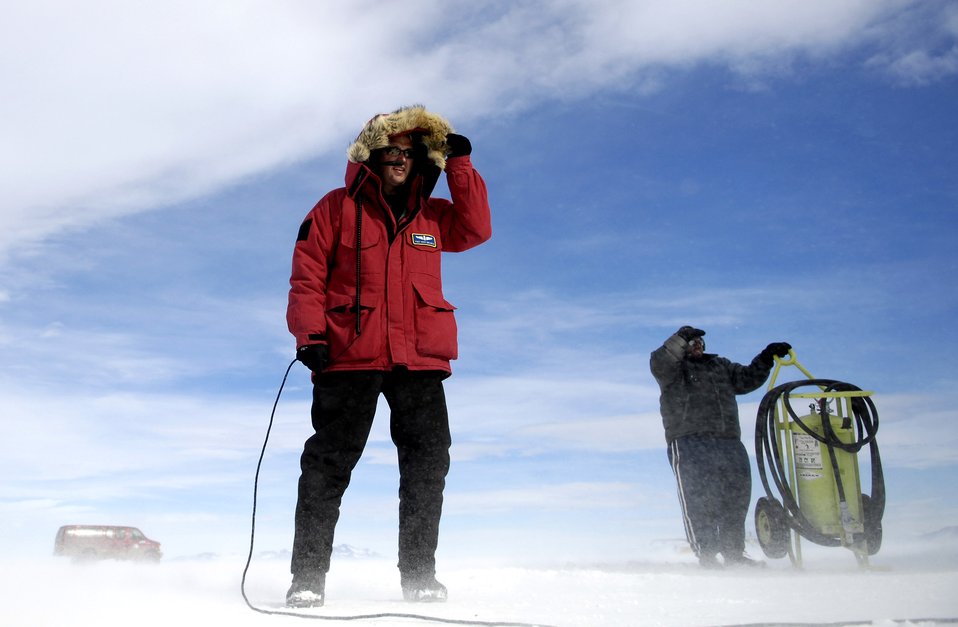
Operation Deep Freeze main season underway

Tech. Sgt. Rich Delucia conducts pre flight checks Nov. 27 on a C-17 Globemaster III on the ice runway near McMurdo Station, Antarctica, during Operation Deep Freeze. C-17s fly large cargo loads from Christchurch New Zealand to Antarctica while the LC-130 Hercules, stationed at McMurdo, fly smaller cargo loads to research posts throughout the continent. The C-17s from McChord Air Force Base, Wash., and ski-equipped LC-130s from the New York Air National Guard's 109th Airlift Wing are supporting the 13th Air Force-led Joint Task Force Support Forces Antarctica operation.